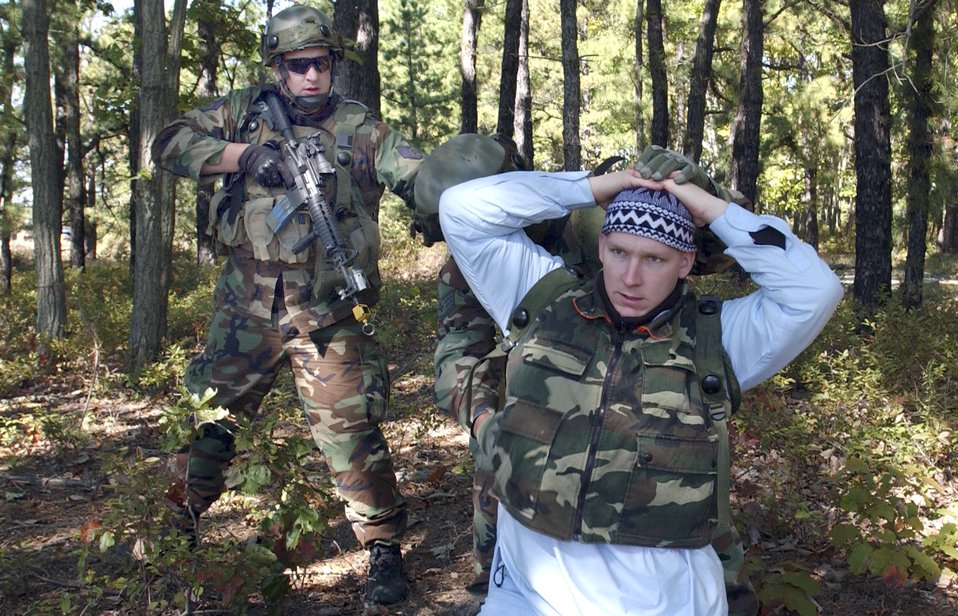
Eagle Flag Exercise

Staff Sgt. Mac McDonald from the 816th Combat Readiness Group detains